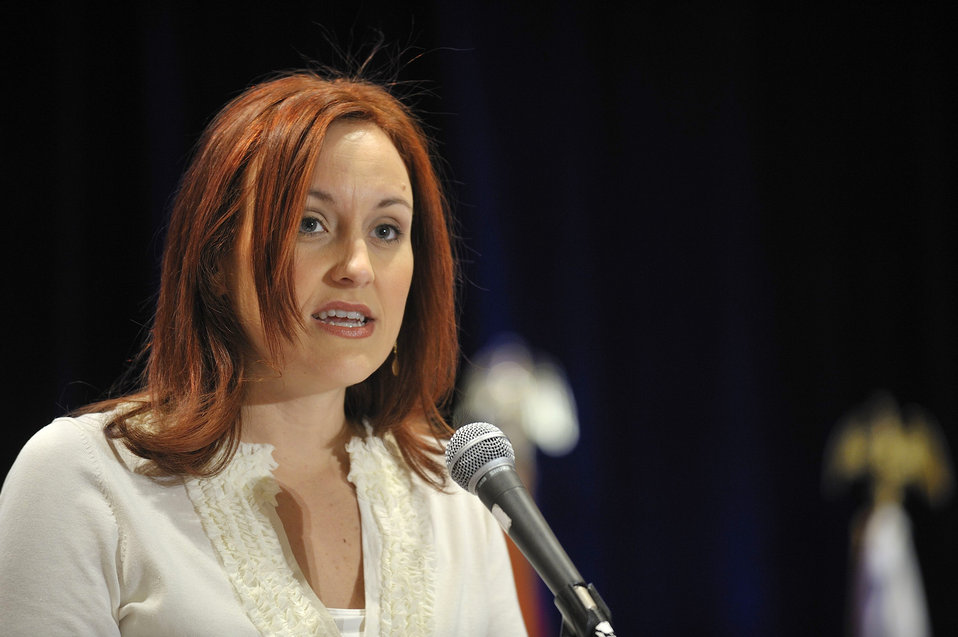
Heather Zichal, Deputy Assistant to the President for Energy and Climate Change.